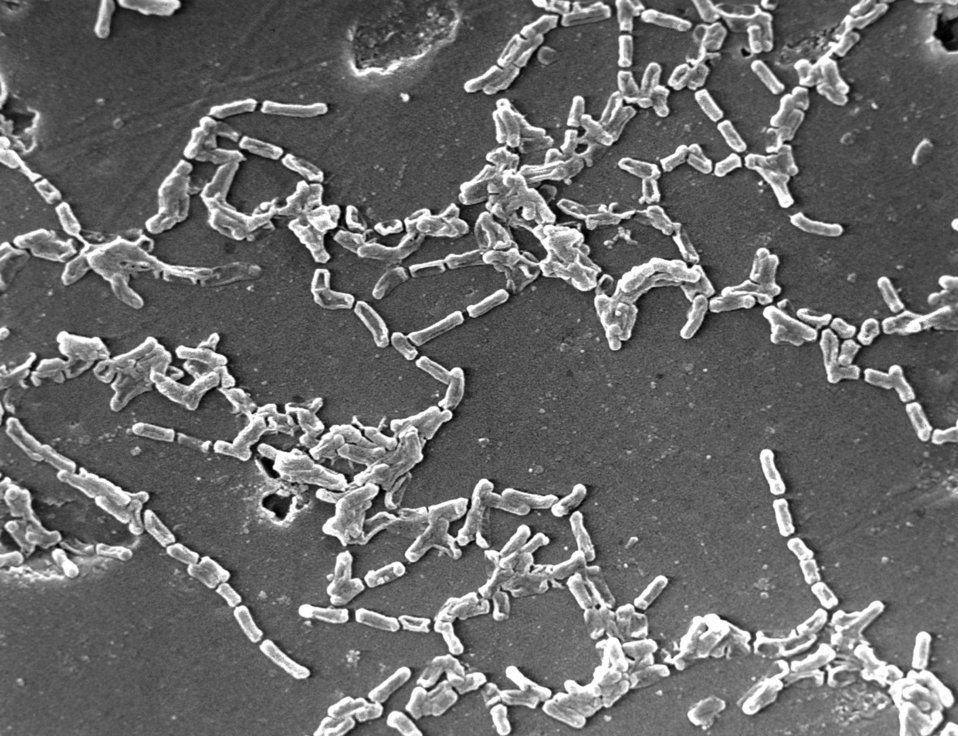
Scanning electron micrograph (SEM) of Mycobacterium chelonae bacteria.